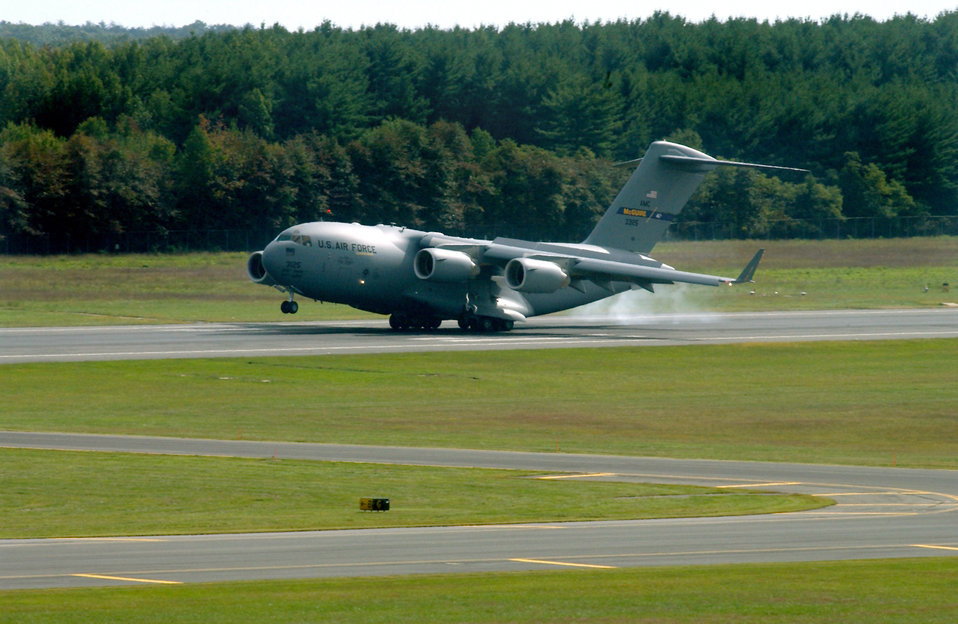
McGuire welcomes first C-17 Globemaster III

MCGUIRE AIR FORCE BASE, N.J. -- A C-17 Globemaster III makes a smooth landing during a welcoming ceremony here Sept. 24. Flown by Col. J.J. Jackson, the 305th Air Mobility Wing commander,